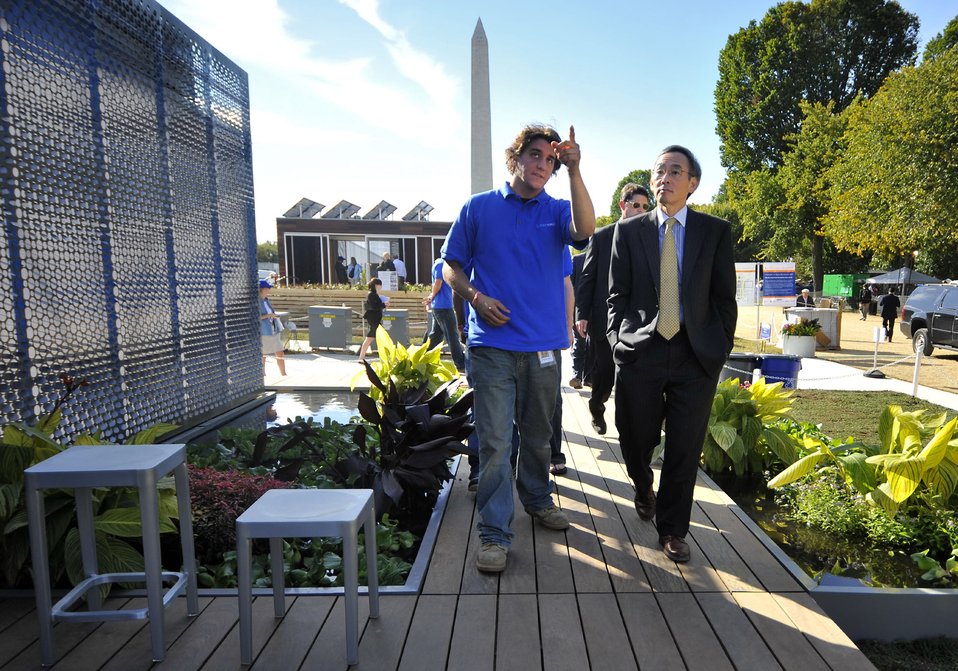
Solar Decathlon 2009 on the National Mall, with Sec. Chu

Solar Decathlon 09